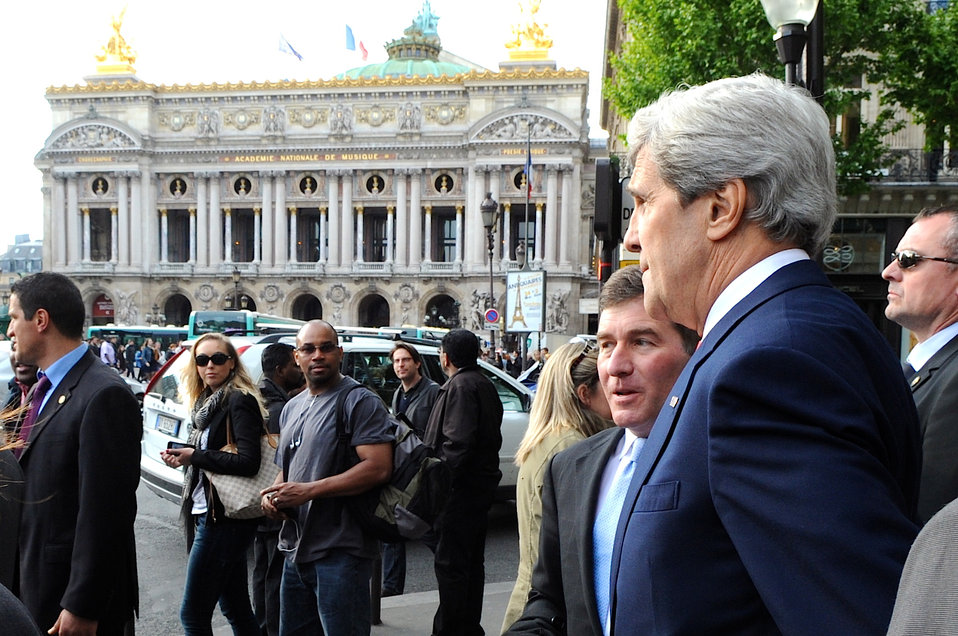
Secretary Kerry and Ambassador Rivkin in Paris

U.S. Secretary of State John Kerry and U.S. Ambassador to France Charles Rivkin pause in front of the Paris Opera House during a walk in Paris, France, on May 27, 2013.